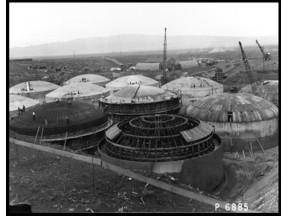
177 tanks at Hanford

In all, 177 tanks we built to store the byproducts of operations at the Hanford site in Washington. EM is now working to permanently dispose of these byproducts.